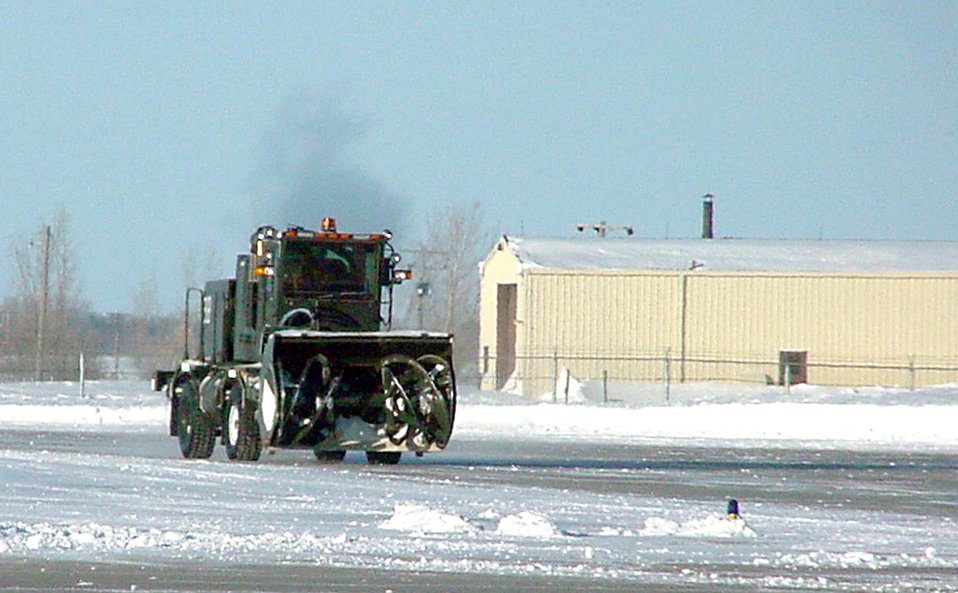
Giant snowblower

GRAND FORKS AIR FORCE BASE, N.D. -- A snow-removal truck from the 319th Civil Engineer Squadron here moves along an area near the flightline Feb. 3 after blowing some snow off of the ramp. Less than a week ago the base here received nearly 2 feet of snow and CES crews are still removing snow in many areas.